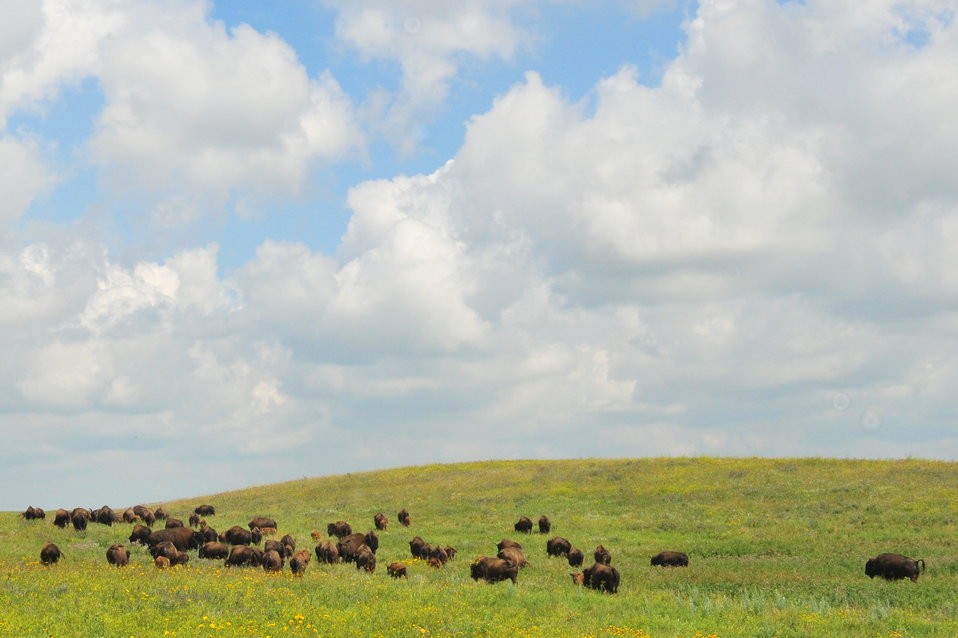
Bison on Ordway Prairie The Nature Conservancy Sand Lake WMD

Bison graze on Ordway Prairie owned and managed by the Nature Conservancy. Site has a USFWS grassland easement protecting it in perpetuity. It is situated in the center of a large block of the Prairie Pothole Region protected through perpetual grassland and wetland easements. In addition the USFWS owns and manages thousands of acres in fee title on Waterfowl Produtction Areas in the area.